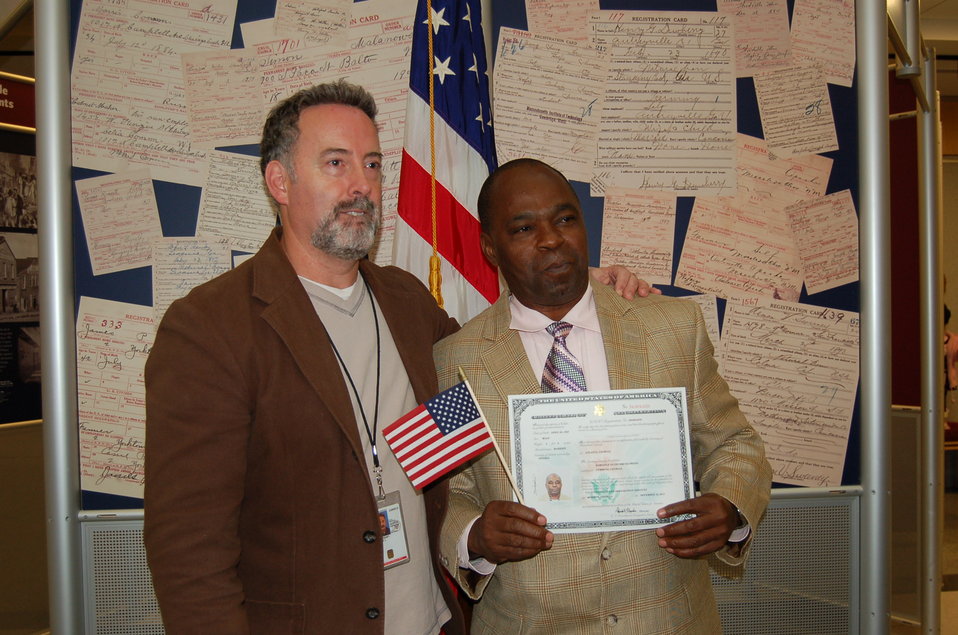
New Citizens